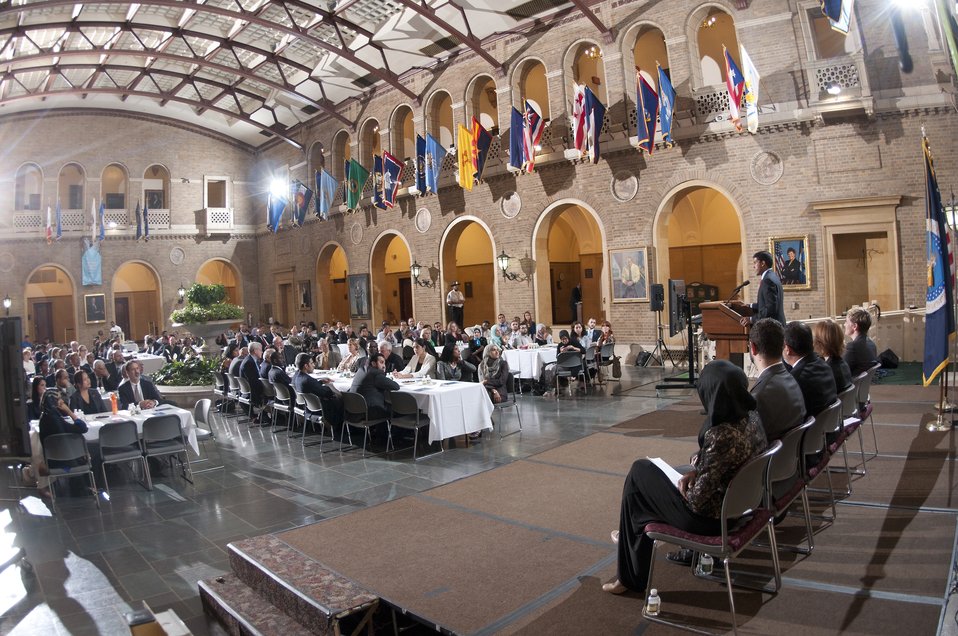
Iftar Audience

A large and diverse crowd gathers for the 4th annual Iftar celebration held at The U.S. Department of Agriculture (USDA) on August 7, 2012. USDA, the U.S. Agency for International Development (USAID) and the Islamic Relief USA co-hosted this event to call attention to the importance of reducing food insecurity abroad with the theme “Feed the Future: Together We Can.”